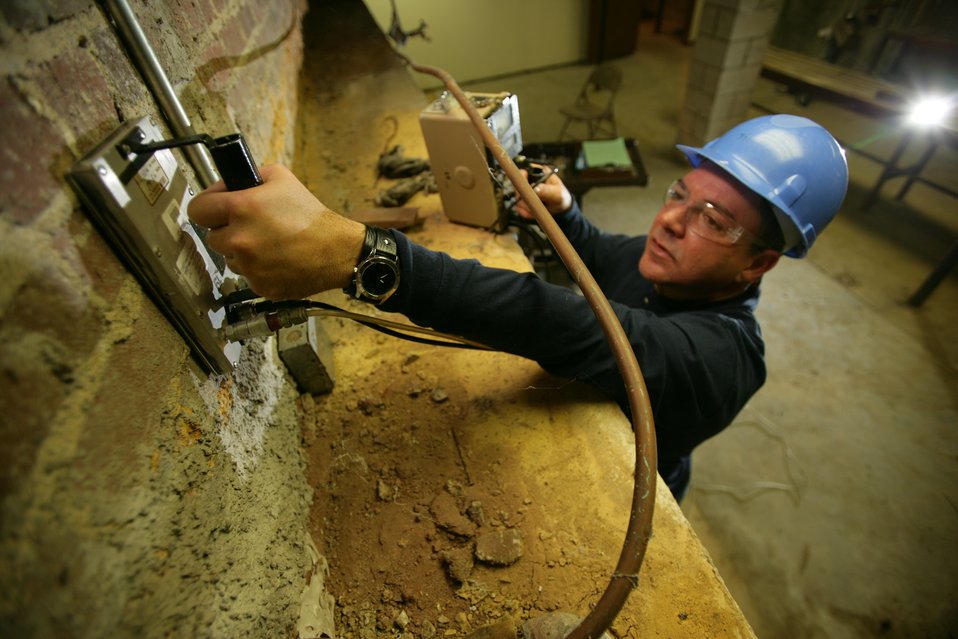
ORISE Independent Characterization

An ORISE employee performs radiation detection at one of the many cleanup sites.
With its more than 30 years of experience providing independent environmental assessment and verification services, the Oak Ridge Institute for Science and Education (ORISE) has been tapped to provide independent characterization surveys of waste at three Oak Ridge sites.